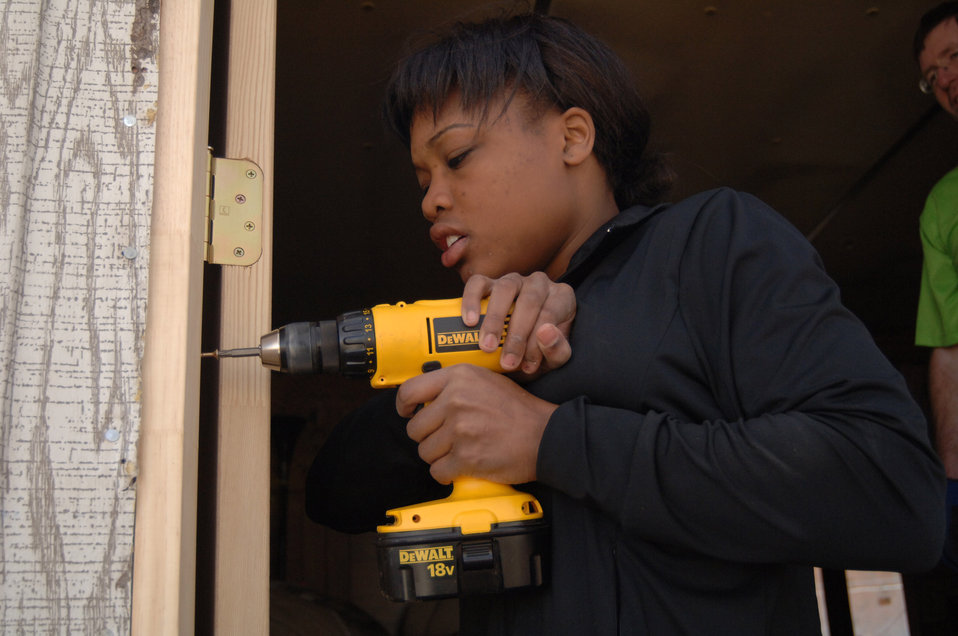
AF Academy volunteers renovate Navajo home

Air Force Academy Cadet 3rd Class Solange Eddy drives a screw into a new doorframe March 26 on the front of Hoskie Bitsilly's home in Navajo, N.M. Cadet Eddy is one of 20 Air Force Academy cadets, faculty and family members who did volunteer work on the Navajo Reservation during the school's spring break. The renovations will reunite a wheelchair-bound mother with her family.